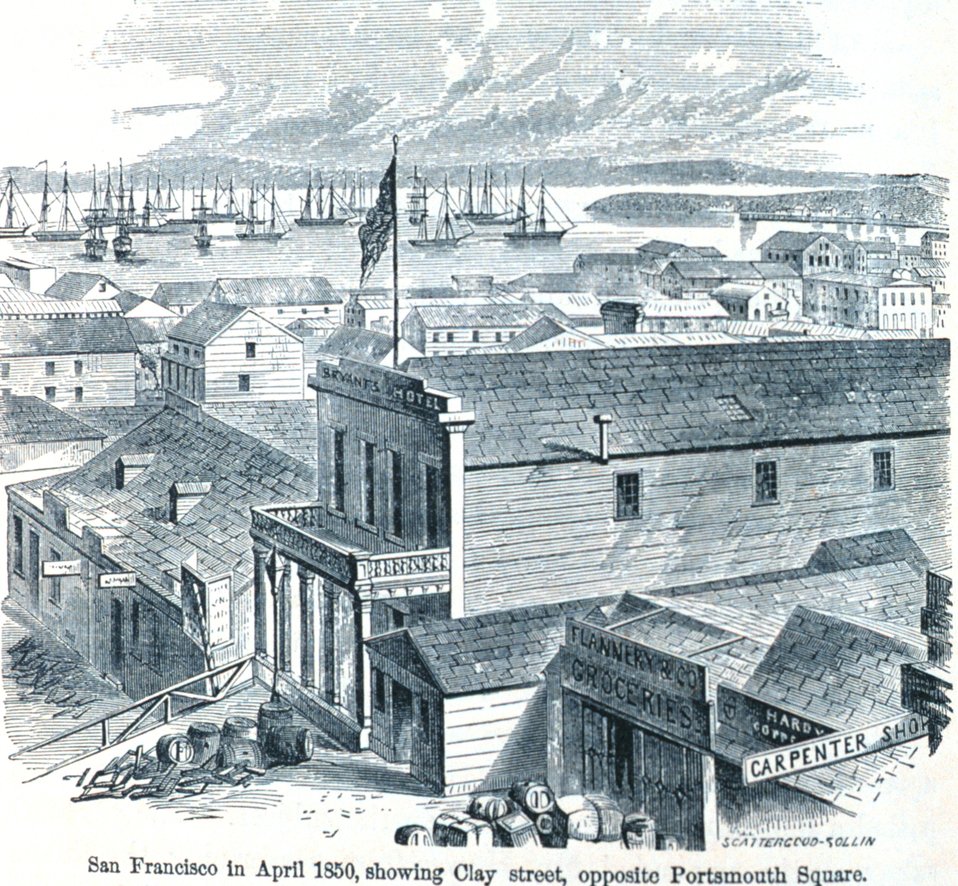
San Francisco in April 1850, showing Clay Street, opposite Portsmouth Square. In: 'The Annals of San Francisco'. Frank Soule, John Gihon, and James Nesbit. 1855. Page 270. D. Appleton & Company, New York. F869.S3.S7 1855.